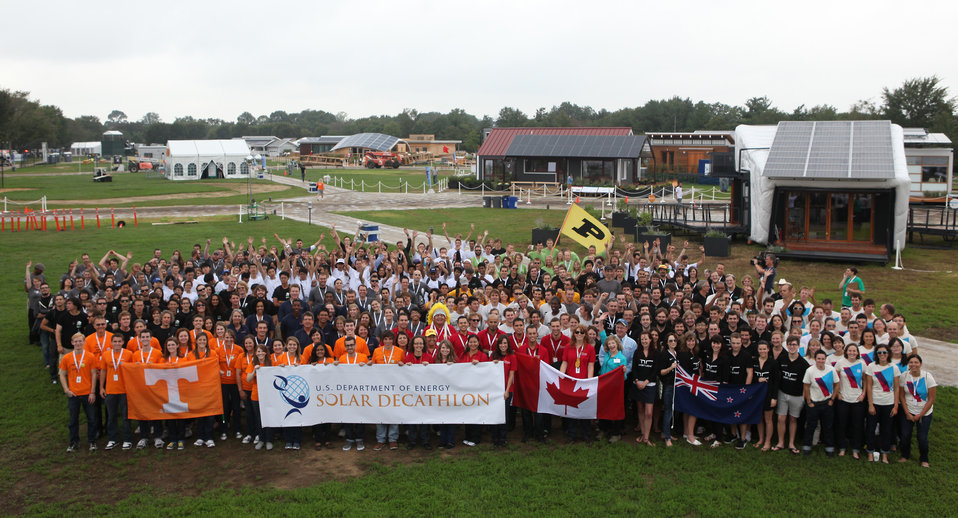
U.S. Department of Energy Solar Decathlon 2011 college and university teams, represent five countries and four continents. The event takes place in Washington, DC. (Credit: S.Paltera/ U.S. DOE / Solar Decathlon)
The Solar Decathlon is a competition that challenges college and university teams from around the world to design, build, and operate solar-powered houses that are affordable, highly energy efficient, attractive, and easy to live in. The 2011 teams and their houses represented a broad range of design solutions, geographic locations and climate, and were targeted toward urban, suburban and rural settings. The houses were intended for different housing markets, including lower-income, disaster relief, retirement, and single family.